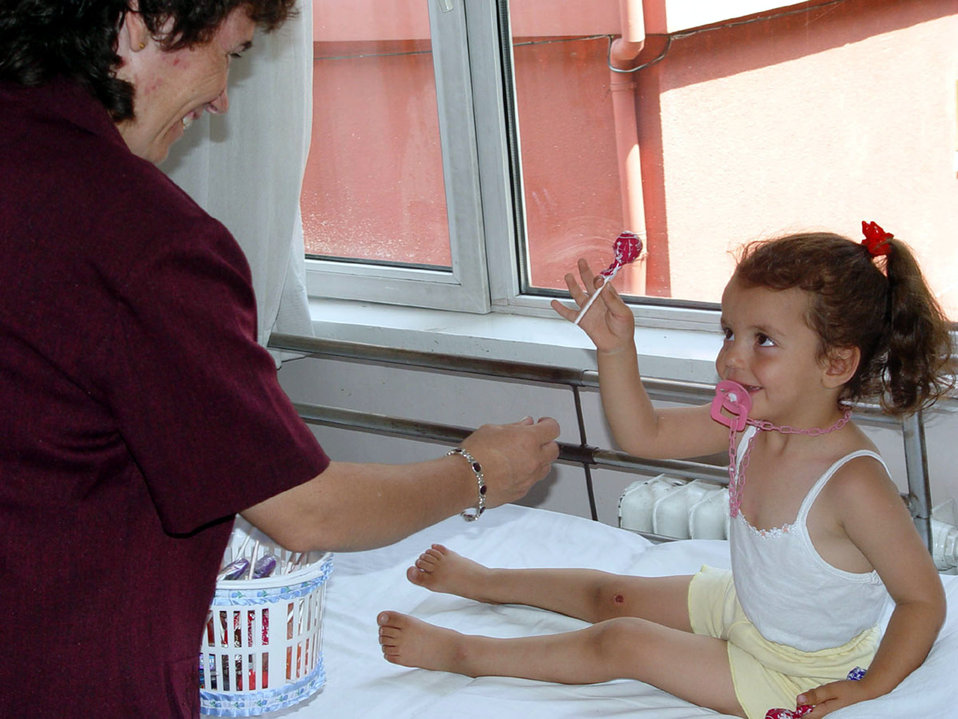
Candy girl

IZMIR AIR STATION, Turkey (AFPN) -- Senior Master Sgt. Suzette Kachmaryk shares some candy with a patient at the Dr. Behcet Uz Children's Hospital in Izmir. Sergeant Kachmaryk is the president of the Izmir Top 4 which raised more than $200 for the hospital this year. The group donated about 2,000 diapers and 30 bags of candy. The sergeant is superintendent of the 425th Air Base Squadron's communications flight.